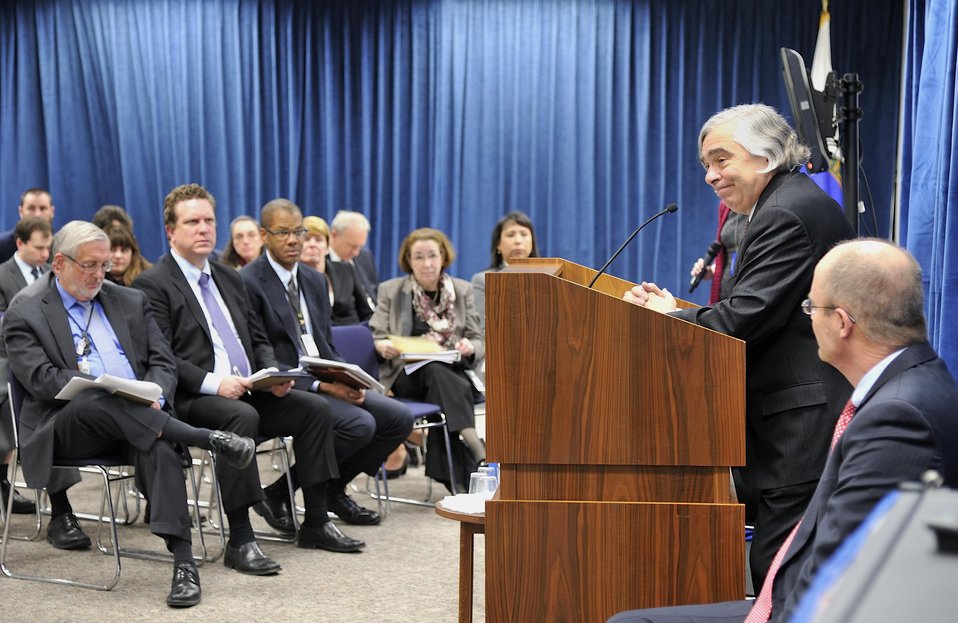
Ken Shipp/DOE Photo

SECRETARY E. MONIZ - 2014 DOE BUDGET ROLL OUT ON MARCH 4, 2014